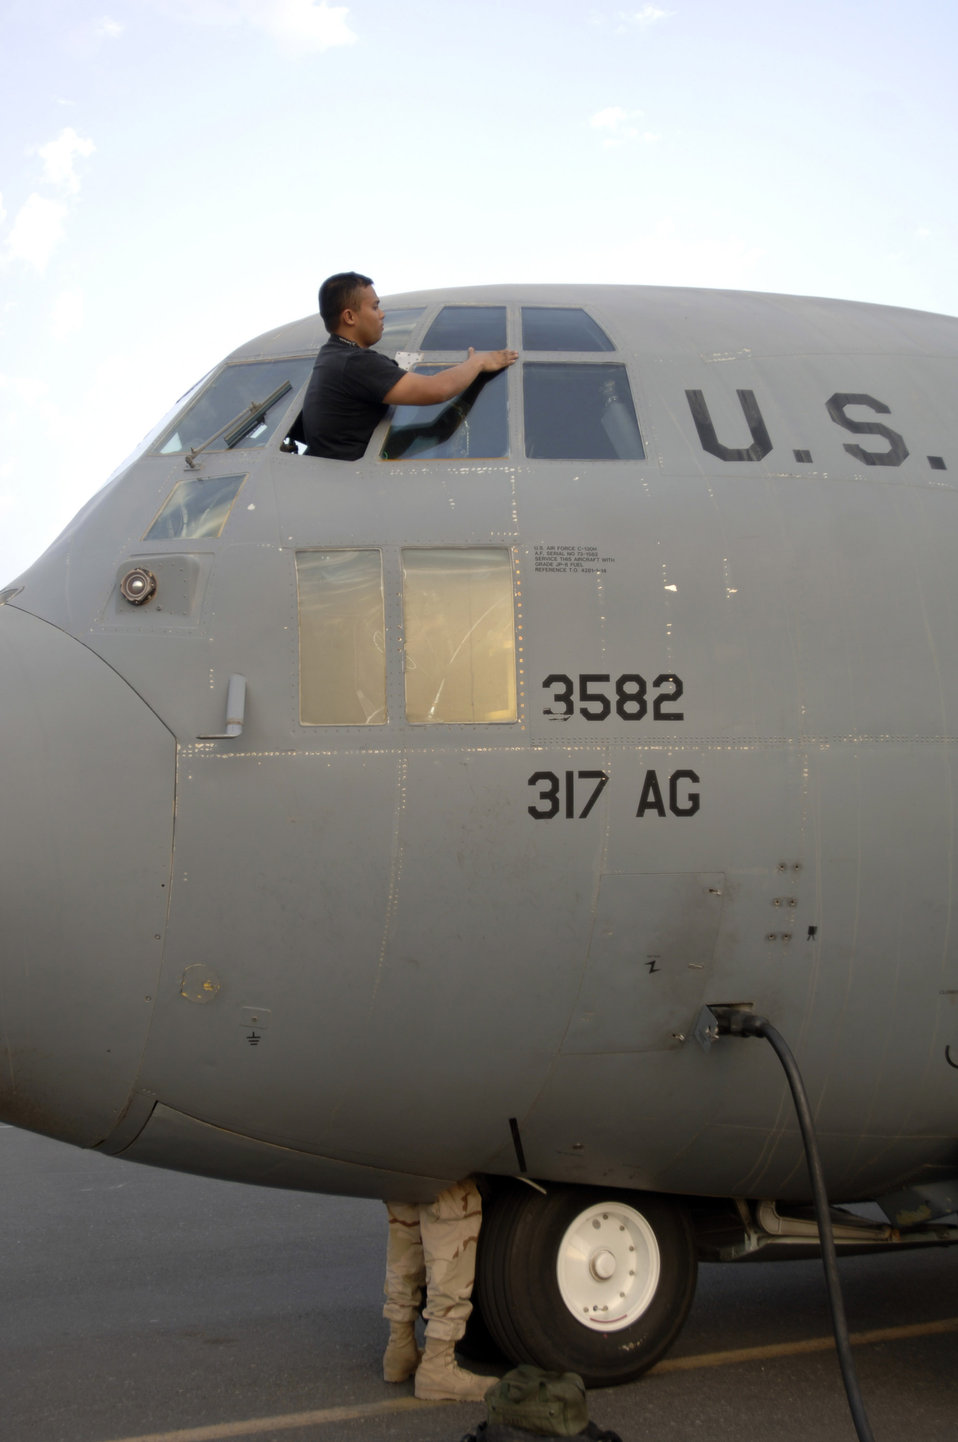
A tall job

C-130 Hercules maintainers perform a post flight check after a leaflet air drop mission over Afghanistan.